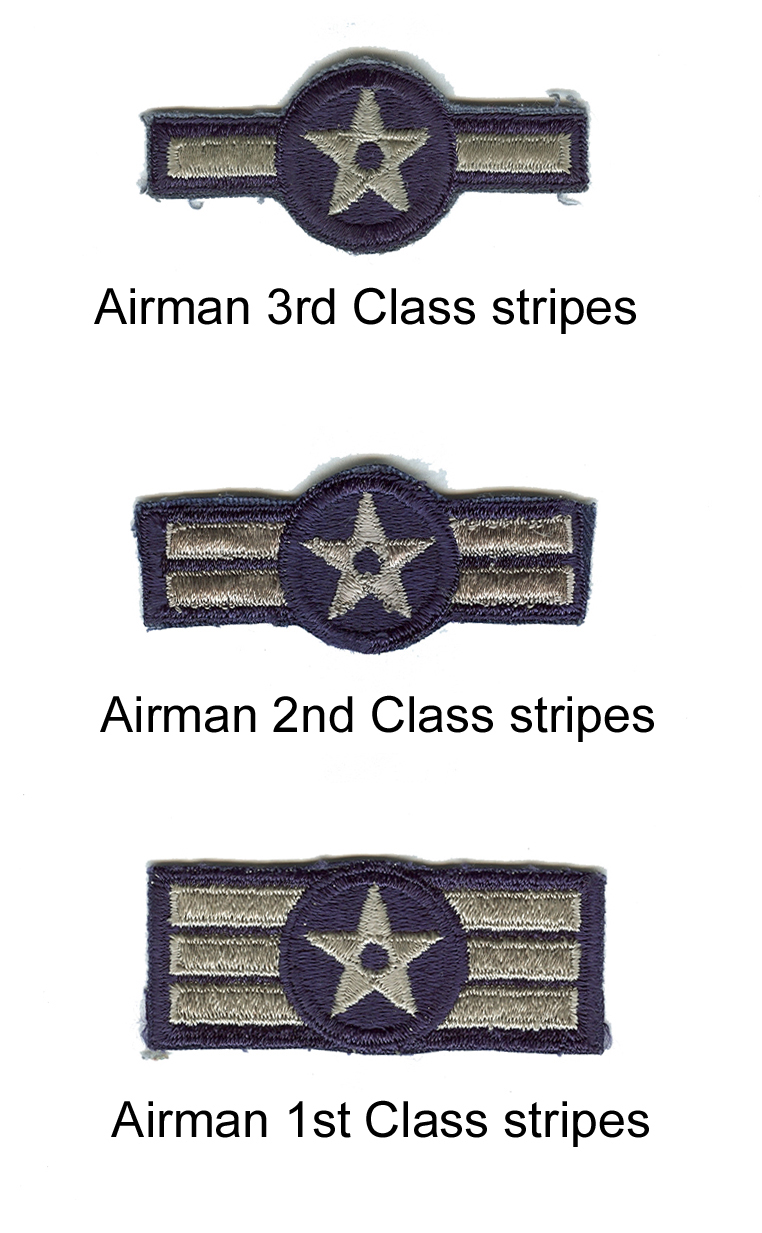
Online purchase turns into historical find

GRAPHIC -- This rare set of 1955 Airman horizontal test stripes was recently purchased online by Jeffrey Hughes and donated to the Air Mobility Command Museum at Dover Air Force Base, Del. These stripes were never adopted for use and were supposed to have been destroyed in 1956. Mr. Hughes is a 305th Mission Support Squadron human resource assistant at McGuire Air Force Base, N.J.